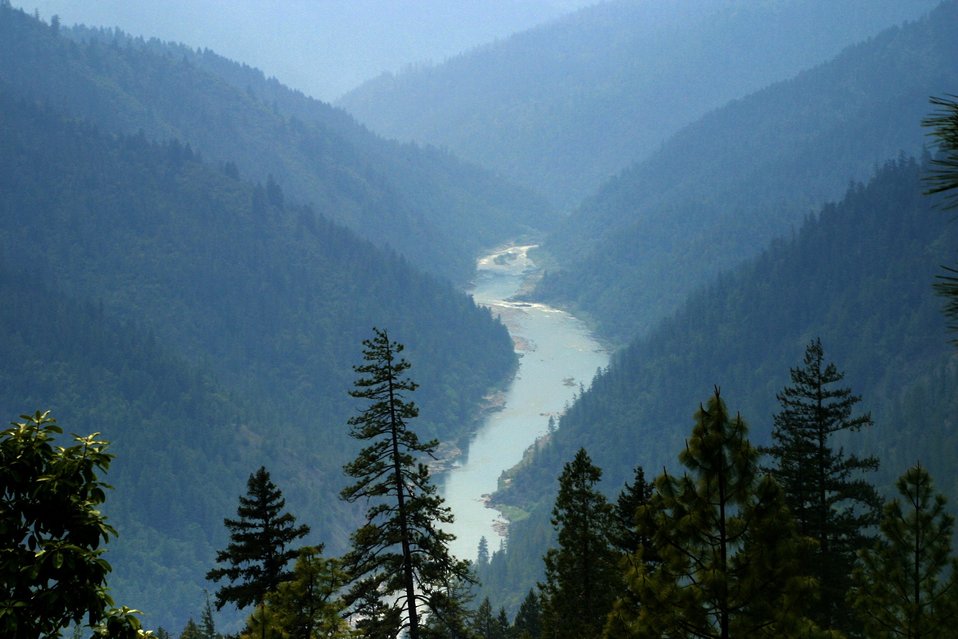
Wild section of the Rogue River from Grave Creek to Foster Bar May 19 to May 22.